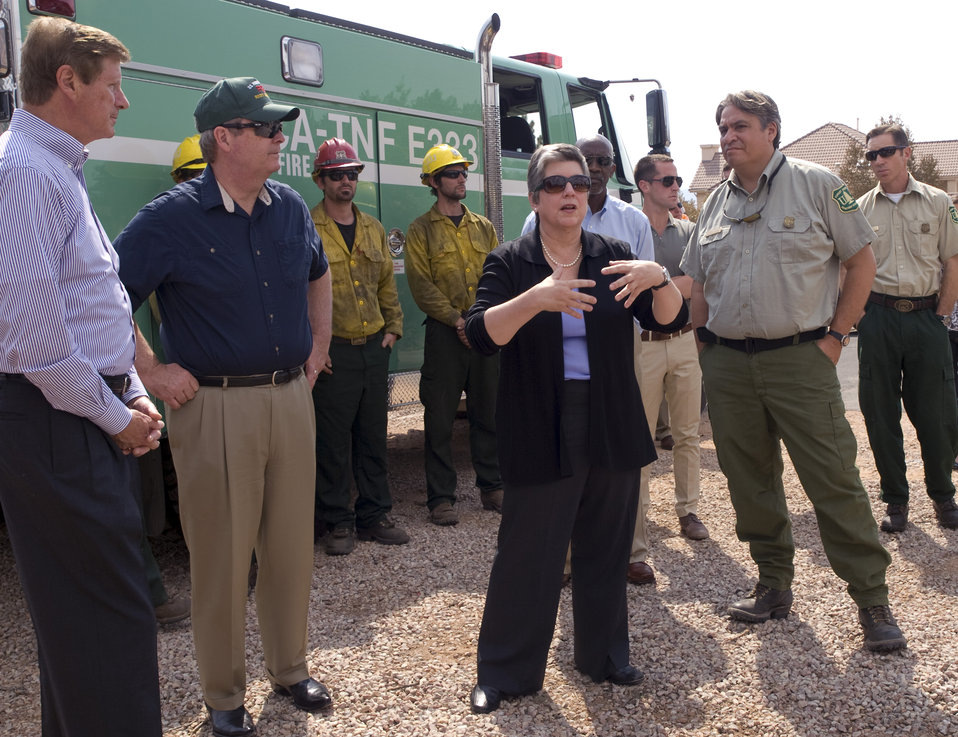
Agriculture Secretary Tom Vilsack (center) and Homeland Security Secretary Janet Napolitano talk with firefighters at the Waldo Canyon Fire near Colorado Springs, CO on Tuesday, July 3, 2012.